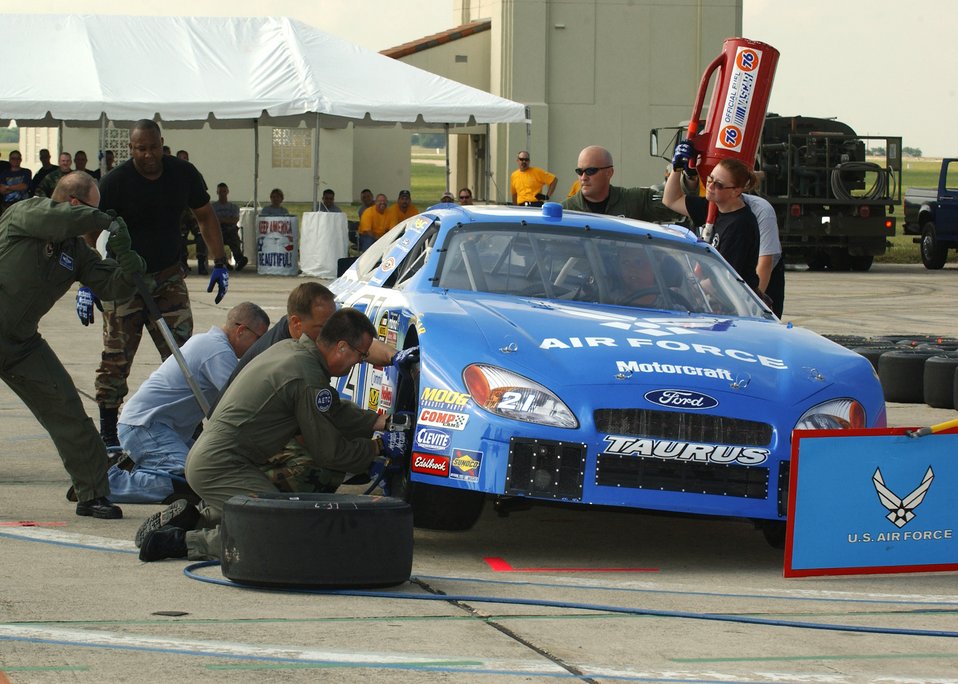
Air Force teams compete in pit-stop challenge

RANDLOPH AIR FORCE BASE, Texas -- Airmen with the Air Education and Training Command's operations directorate and 19th Air Force team perform a pit-stop routine, including changing two tires and simulating filling the gas tank, on the NASCAR No. 21 Air Force car during a pit-stop competition here June 23. The AETC team finished in first place at 13.73 seconds.